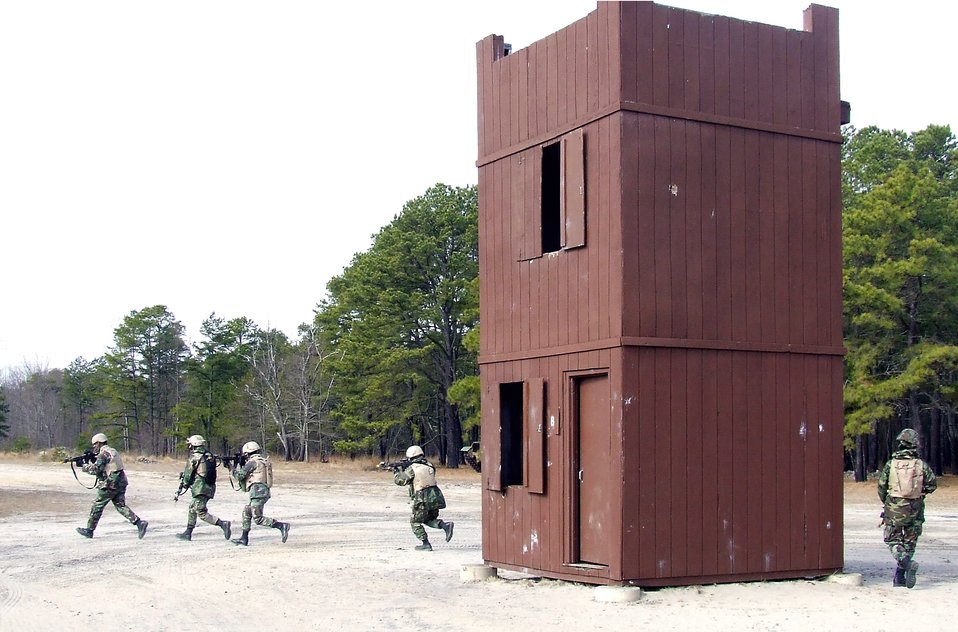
Warrior training

Students in the Air Force Phoenix Warrior Training Course 08-3 practice a military operations in urban terrain scenario scenario during training Feb. 20 on a range at Fort Dix, N.J. The course is taught by members of the Air Force Expeditionary Center's Expeditionary Operations School and 421st Combat Training Squadron and the course prepares security forces Airmen for upcoming deployments.